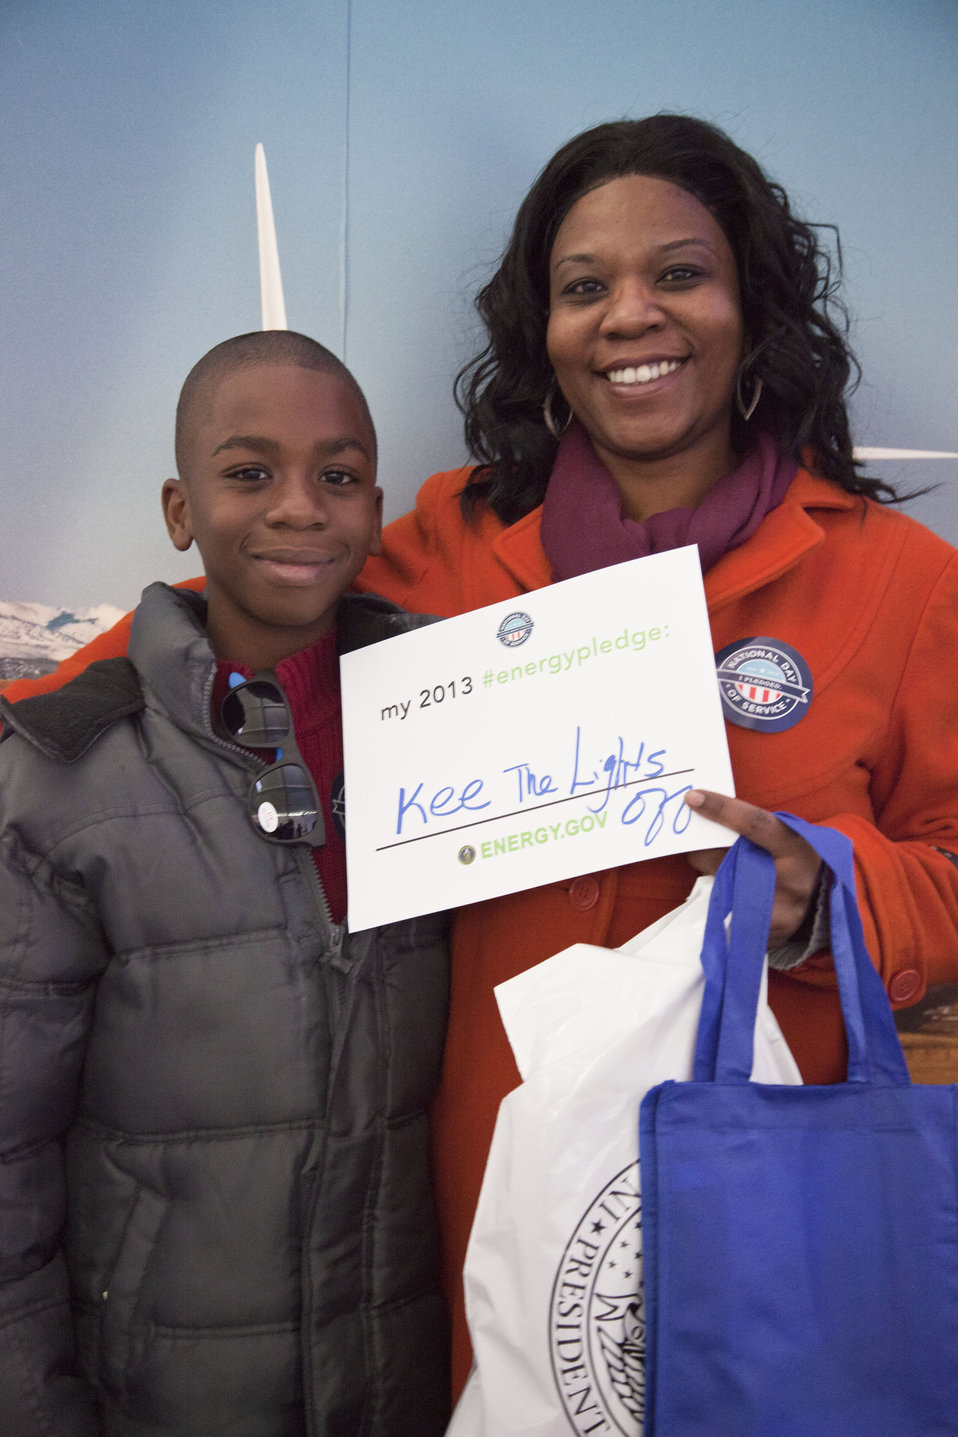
What's your #energypledge?